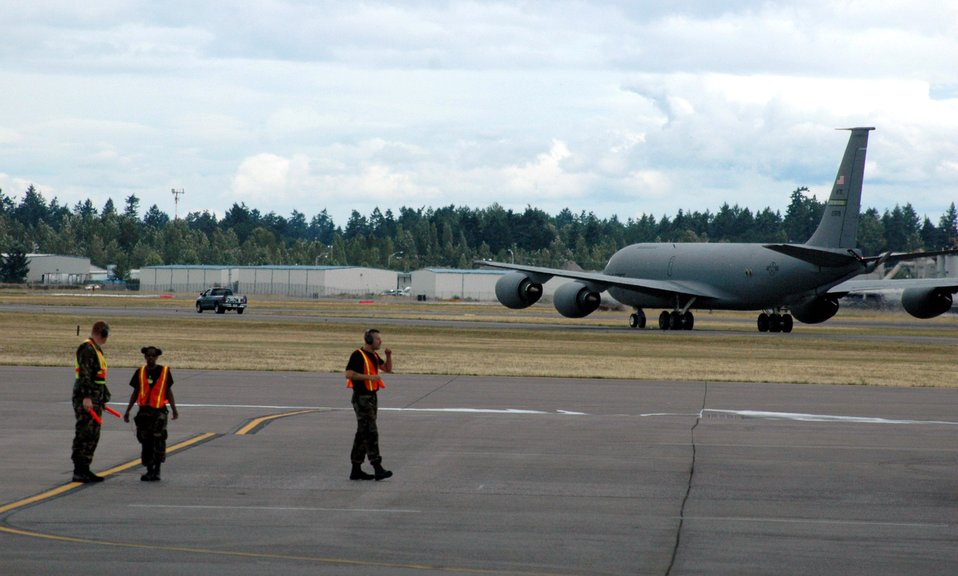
Planners keep Rodeo 2007 aircraft flying

Maintenance Airmen work on the flightline at McChord Air Force Base, Wash., while a KC-135 Stratotanker from Grand Forks AFB, N.D., taxies to a parking area July 21 during operations for Rodeo 2007. The airlift competition, sponsored by Air Mobility Command, focuses on improving worldwide mobility forces' professional core abilities. More than 40 teams and 2,500 people from the Air Force, and Air Force Reserve, as well as allied nations, are expected to participate.